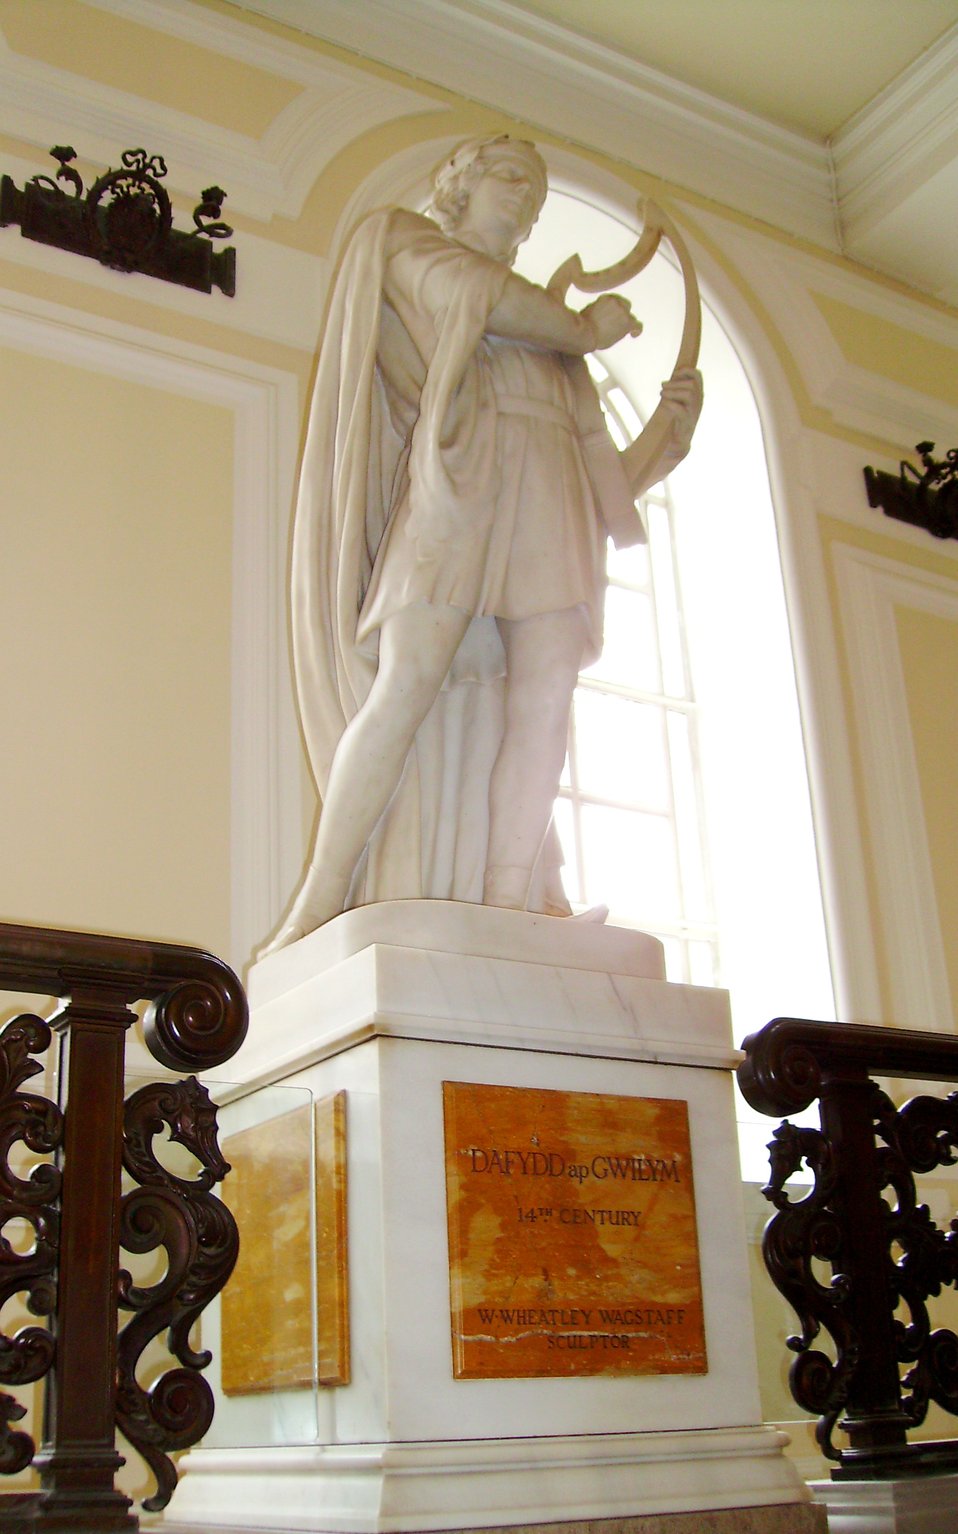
Sculpture of Dafydd ap Gwilym by sculptor William Wheatley Wagstaff (1880-19??), Cardiff City Hall, Cardiff, Wales.